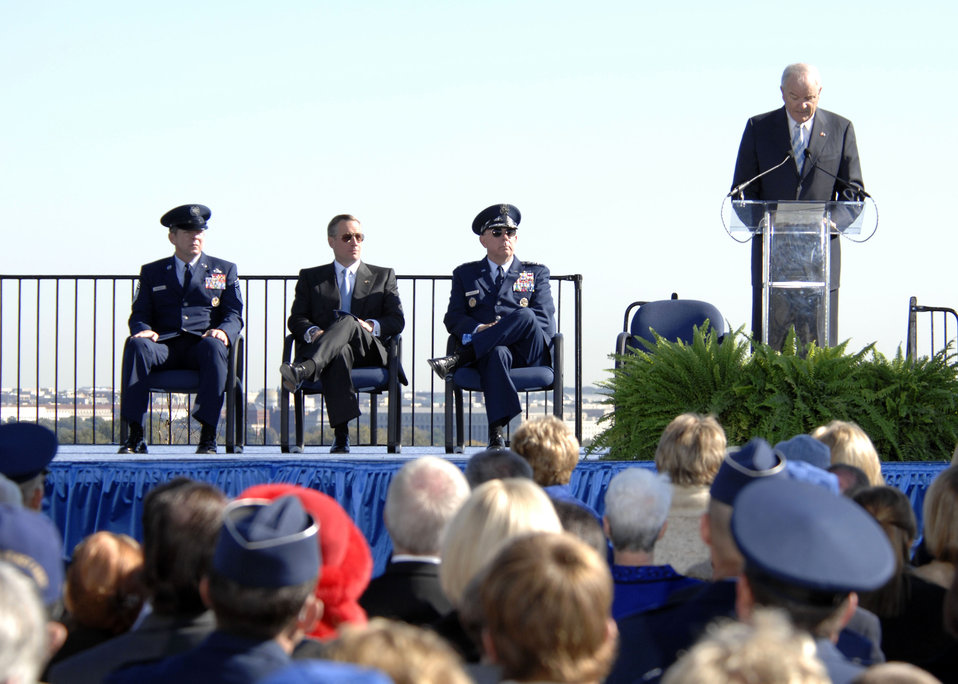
Wreath Ceremony

Hundreds gathered at the base of the new Air Force Memorial as Secretary of the Air Force Michael W. Wynne officially closed the Air Force Memorial commemoration with a wreath laying ceremony in Arlington, Va., Oct. 15, 2006. Looking on are (from left) Chief Master Sgt. of the Air Force Rodney J. McKinley, Air Force Memorial Foundation Chairman Ross Perot Jr., and Air Force Chief of Staff Gen. T. Michael Moseley.